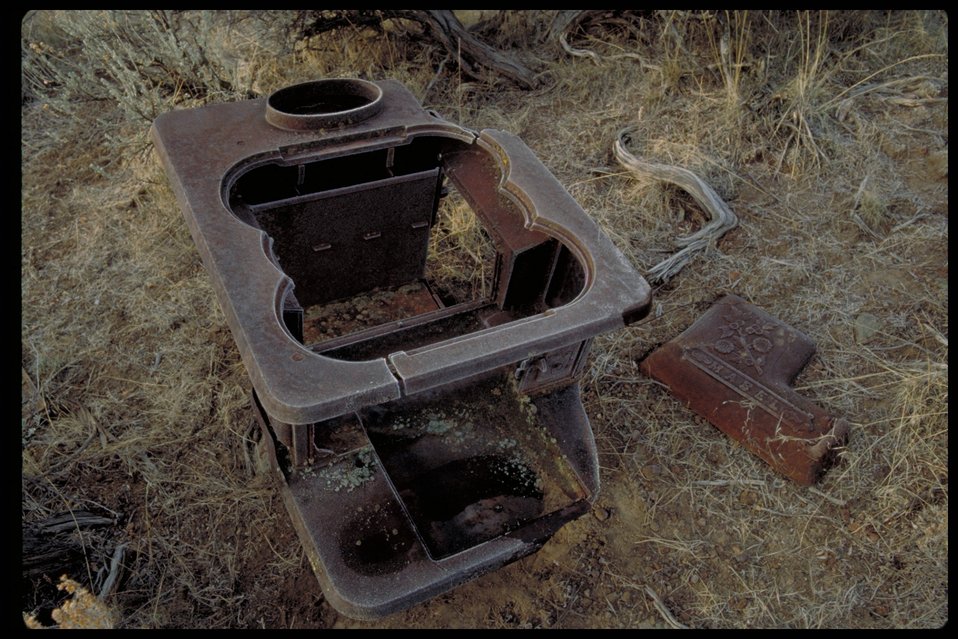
Oregon Trail at Alkali Creek Lower Snake River District